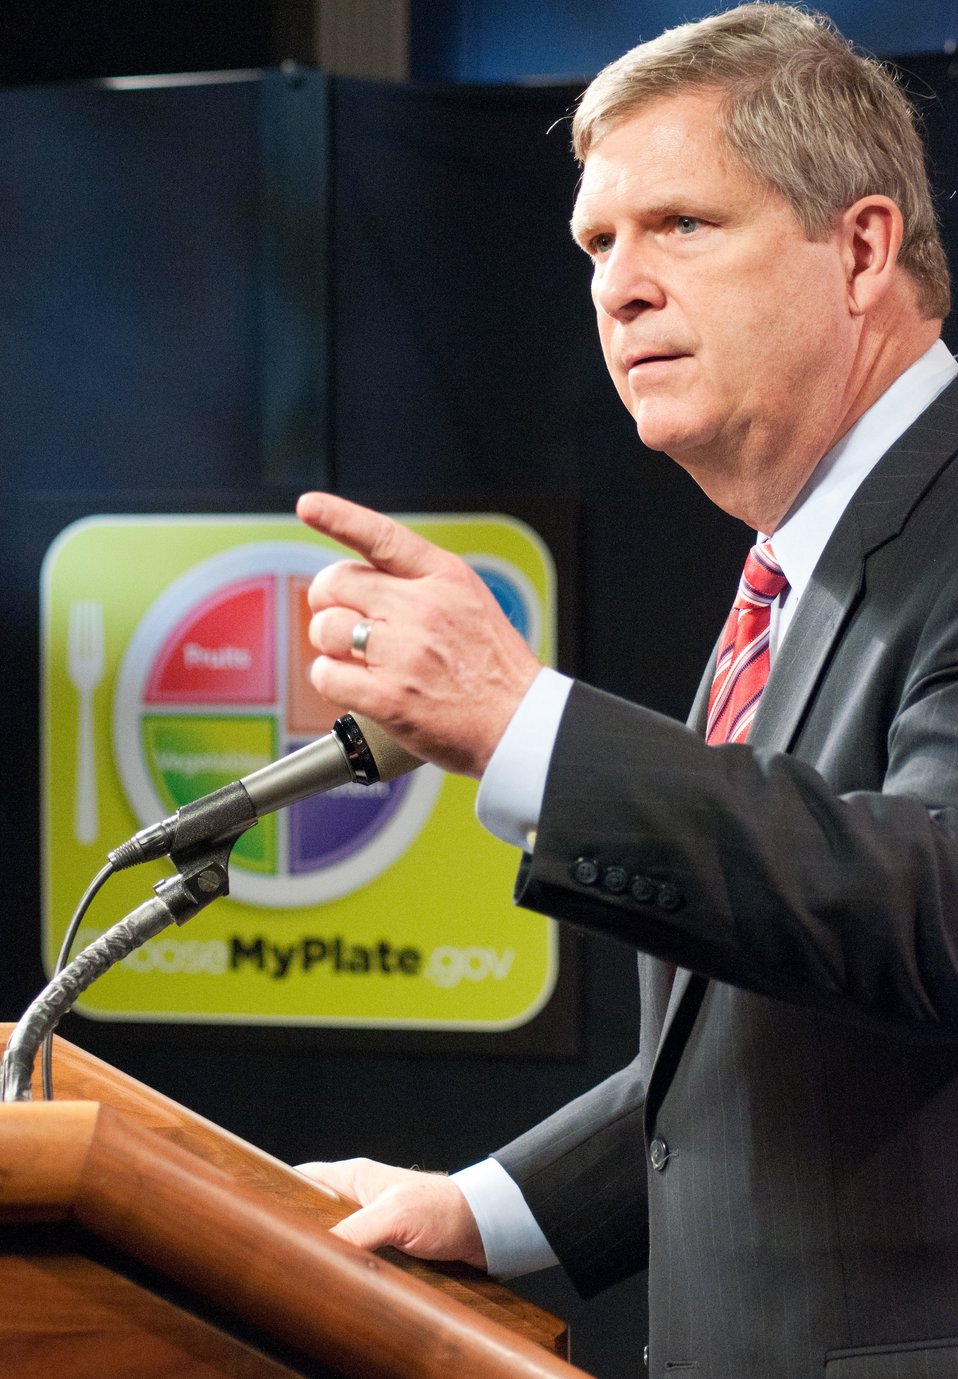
Agriculture Secretary Tom Vilsack (at podium) held a press conference directly after the announcement new food icon that will serve as a reminder to help consumers make healthier food choices at the United States Department of Agriculture, Thursday, June 2, 2011. The new food icon will be part of a comprehensive nutrition communication initiative that provides consumers with easy-to-understand recommendations, a new website with expanded information and other tools and resources.